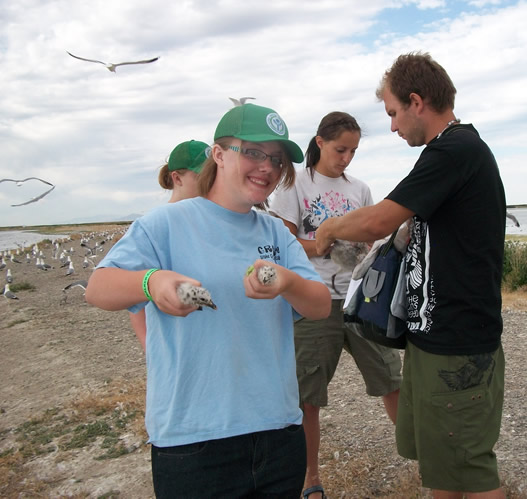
YCC participant holds young birds

Youth Conservation Corps Crew assist Weber State University professor, John Cavitt, and his students conducting research on Snowy Plover, Cliff Swallows, California Gulls, Great Blue Herons, and White-Faced Ibis throughout the season. The youth looked for nests, banded chicks, and assisted with vegetation data collection.